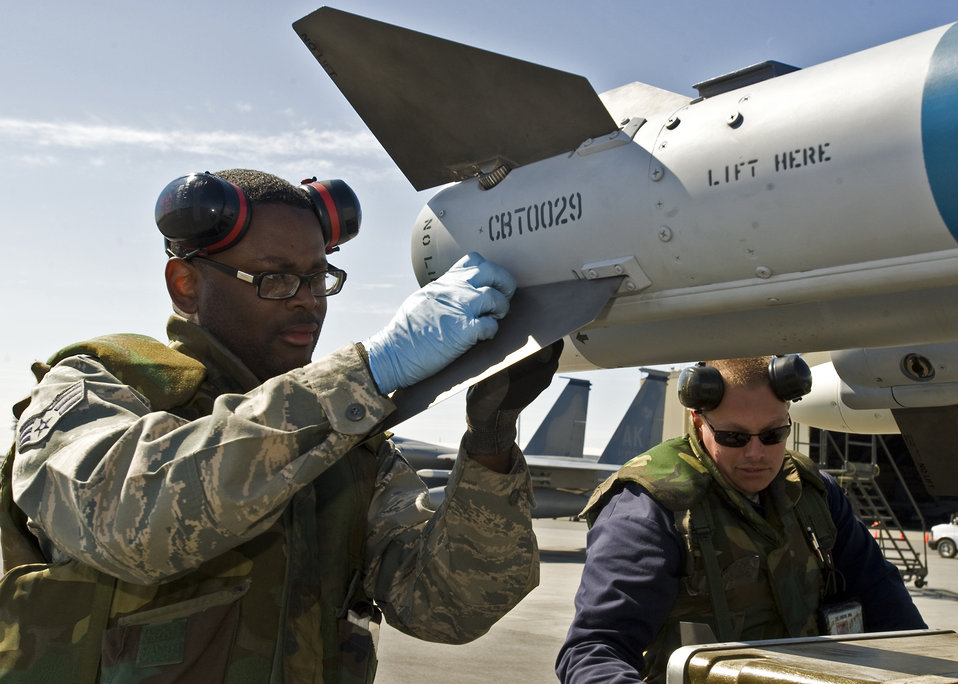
Polar Force readiness

Senior Airman Robert Edwards from the 19th Aircraft Maintenance Unit inspects the fins of a missile before loading it onto an F-15 Eagle May 19 during Polar Force 09-05 at Elmendorf Air Force Base, Alaska. The exercise prepares base personnel for the upcoming operational readiness inspection beginning June 1.